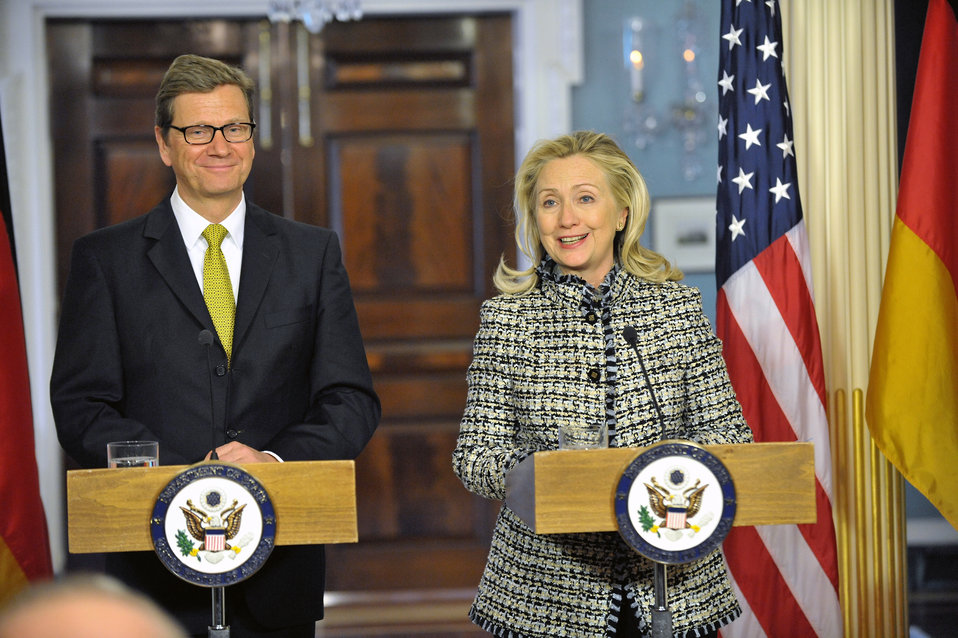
Secretary Clinton and German Foreign Minister Westerwelle Hold a Joint Press Conference

U.S. Secretary of State Hillary Rodham Clinton and German Foreign Minister Guido Westerwelle hold a joint press conference after their bilateral meeting at the U.S. Department of State in Washington, D.C., on January 20, 2012.